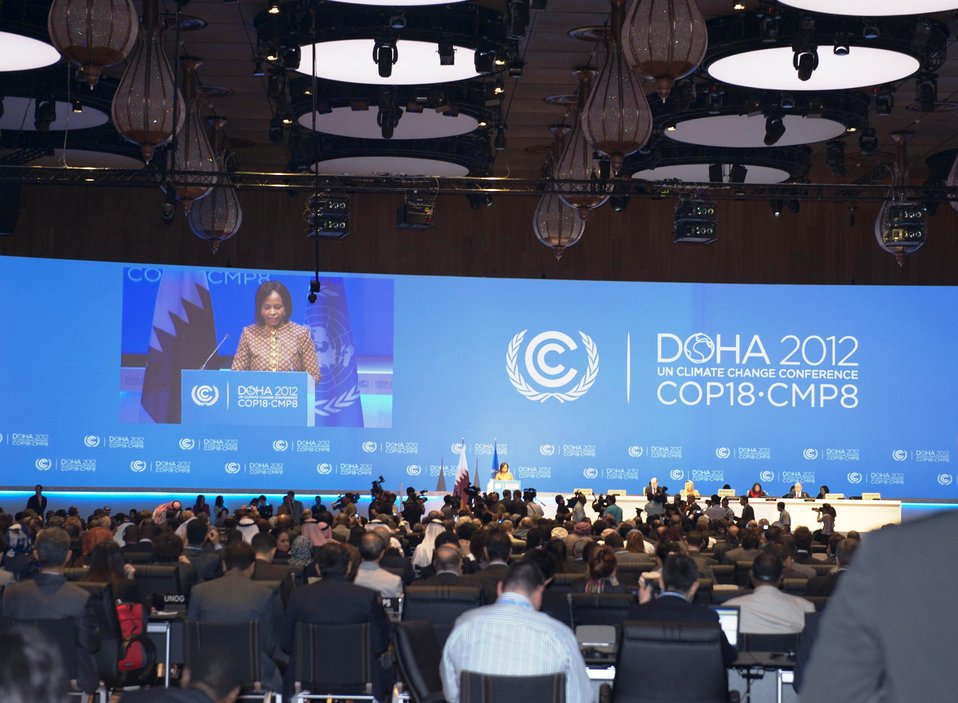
A Speaker Delivers Remarks at COP-18

Members of the audience listen to the speaker at the 18th Session of the Conference of the Parties to the UN Framework Convention on Climate Change (COP-18) at the Qatar National Convention Center in Doha, Qatar, November 26, 2012.